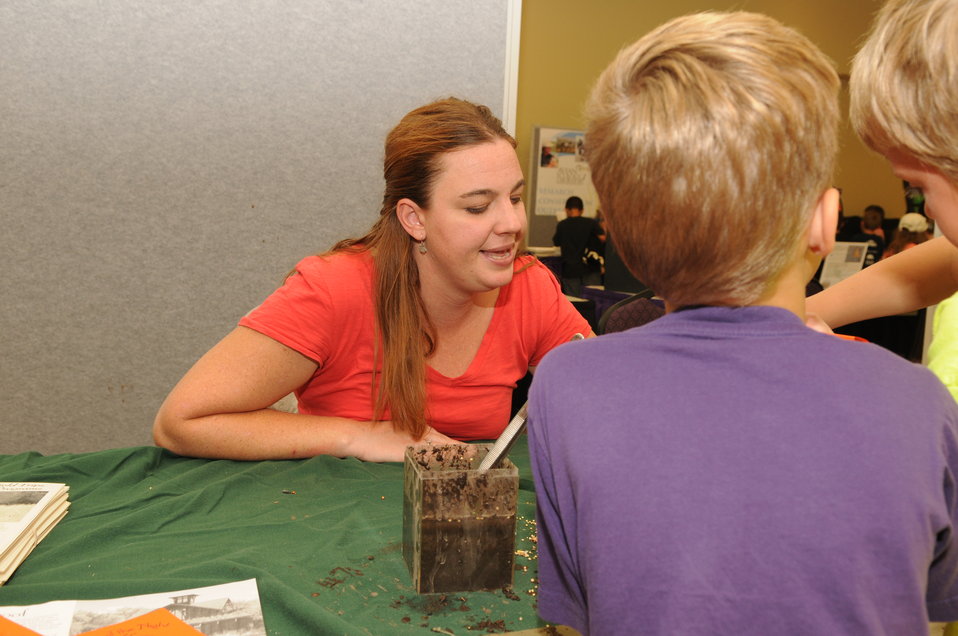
Youth Outreach

The U.S. Fish & Wildlife Service sponsored the 2012 Federal Duck Stamp Art Contest September 28 and 29 in Ogden, Utah, at Weber State University. A panel of five judges was responsible for choosing the art work used to design the 2013-2014 Migratory Bird Hunting and Conservation Stamp.